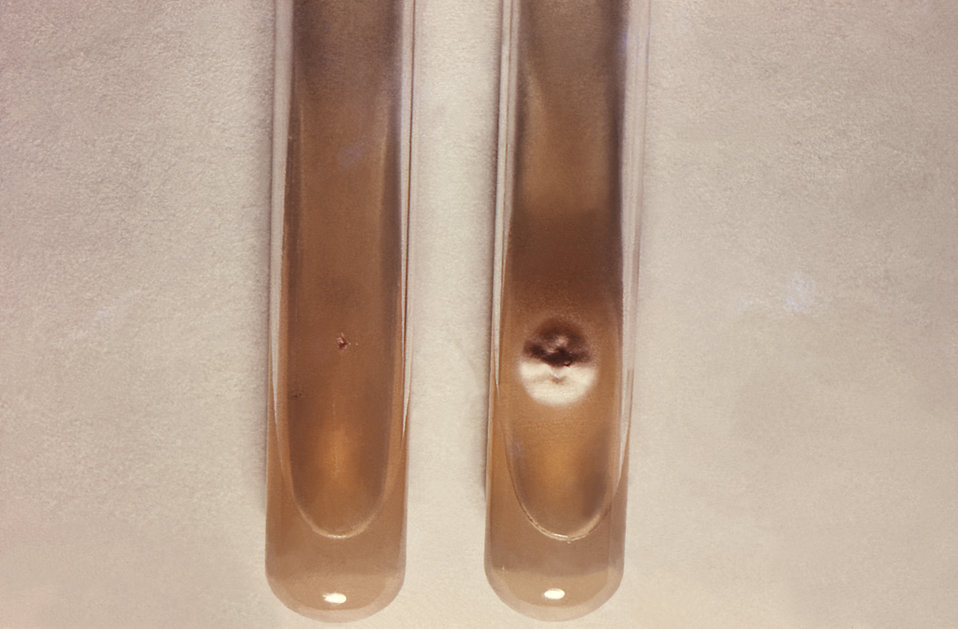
The two test tubes depicted here were being used to carry out a nutritional test involving the identification of the dermatophytic fungus, Trichophyton megninii. In this particular instance, a T. megninii inoculum had been added to two different growth media. On the left, the medium consisted solely of an ammonium nitrate (NH4NO3) agar, while on the right, to the same NH4NO3 agar medium, the ammino acid histidine had also been added. Note that with the addition of the nutrient histidine, the T. megninii organsms were thriving, and had created a single fungal colony atop the medium.